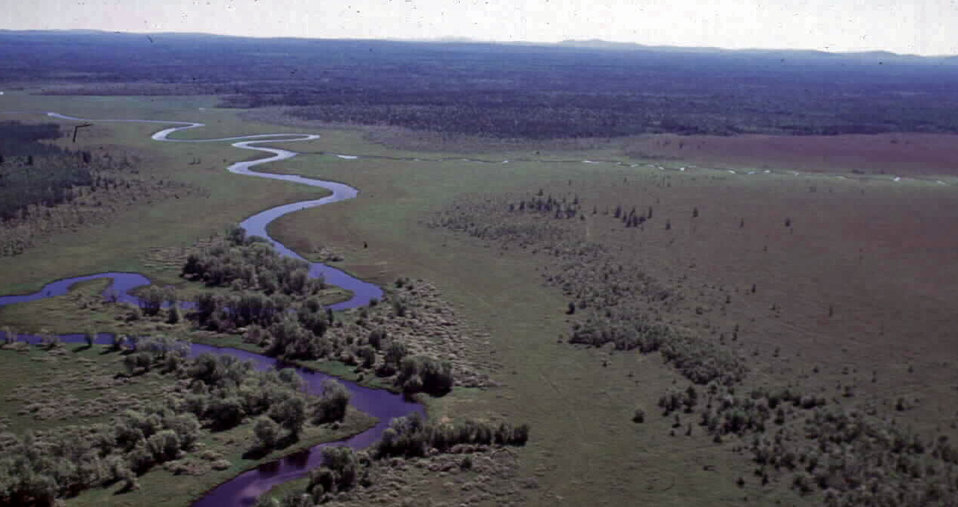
Aerial view

Sunkhaze Meadows National Wildlife Refuge, ME.